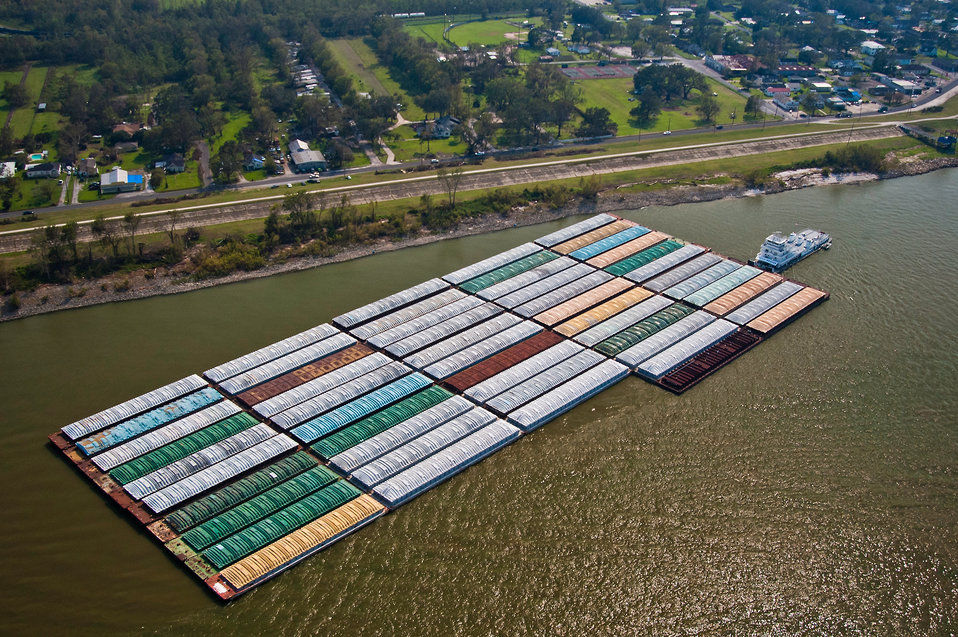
Barge and ship traffic transporting export cargo on the Mississippi River in the Port of New Orleans, New Orleans, LA on Sept. 9, 2005.